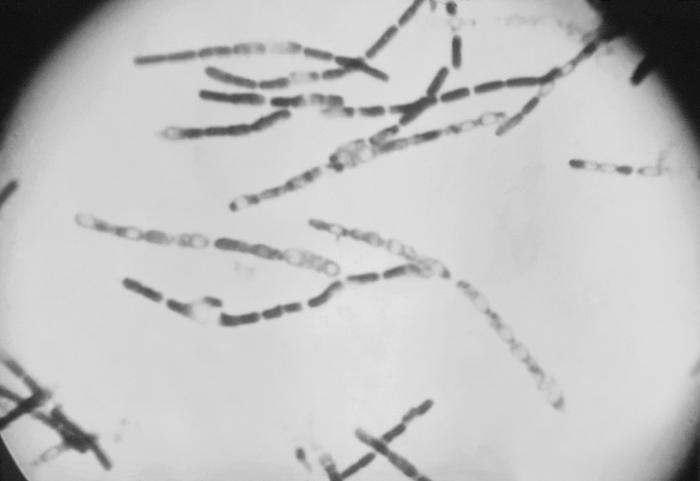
This photomicrograph depicted a number of Gram-positive, endospore-forming Bacillus anthracis bacteria. B. anthracis is the pathologic microorganism responsible for the disease 'anthrax', an acute infectious disease, which most commonly occurs in wild and domestic vertebrates (cattle, sheep, goats, camels, antelopes, and other herbivores), but it can also occur in humans when they are exposed to infected animals, or tissue from infected animals.